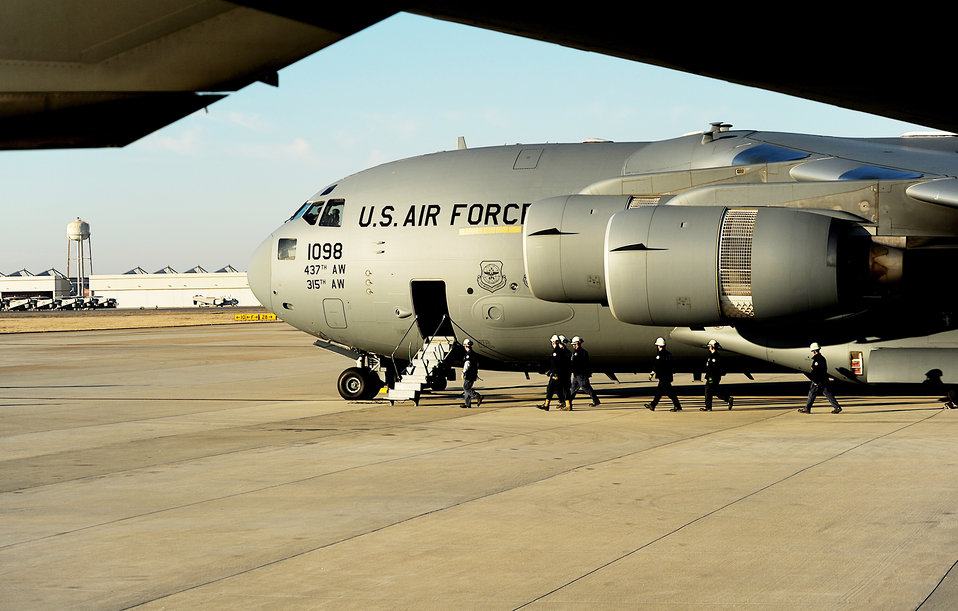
Haiti Earthquake Relief

Members from the Virginia Task Force 2 Urban Search and Rescue start to board a C-17 Globemaster III from Charleston Air Force Base, S.C. Jan. 15, 2010, at Norfolk, Va. The Virginia Task Force 2 team is heading to Haiti as part of the Haiti earthquake relief effort.